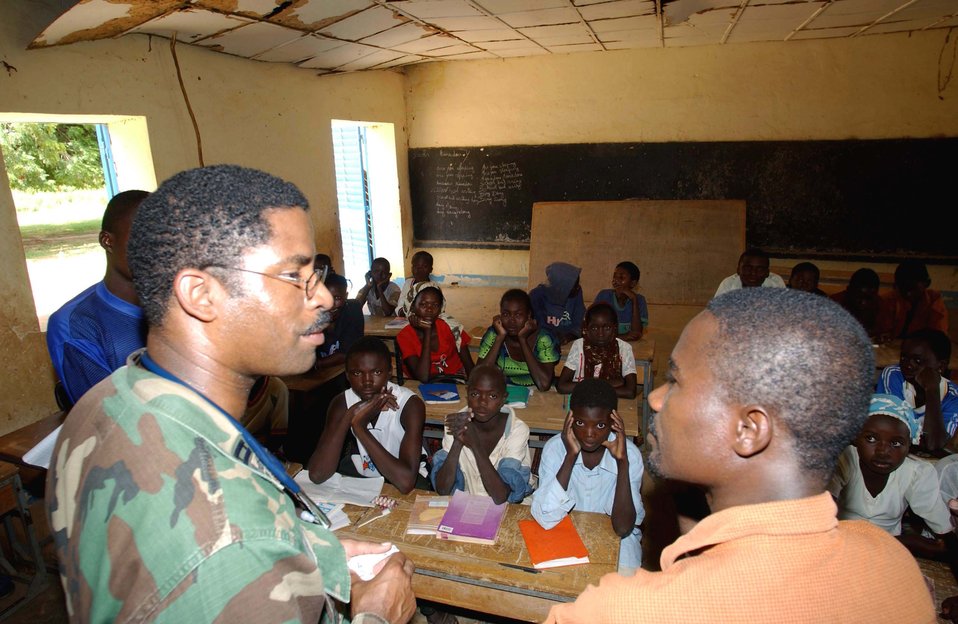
Reservists visit Nigerien school

NEAR CAMP TONDIBIAH, Niger -- Capt. Andrew Gibson and translator Hamadou Soumana discus health care and hygiene to a group of students at a local school. Captain Gibson was part of an Air Force Reserve humanitarian mission in Niger. He is a physician's assistant with the 6th Medical Group at MacDill Air Force Base, Fla.